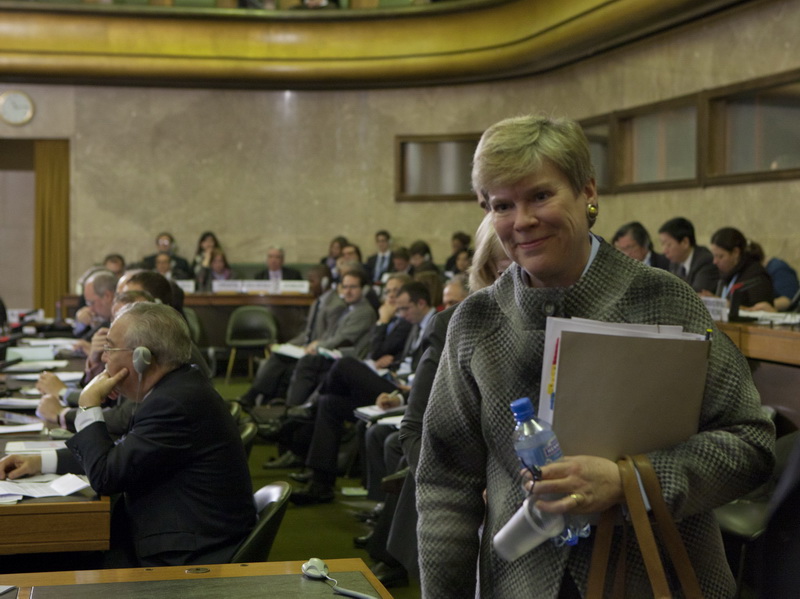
Assistant Secretary Gottemoeller Prepares To Deliver the Opening Statement

Rose E. Gottemoeller, Assistant Secretary of State for Arms Control, Verification and Compliance, prepares to deliver the opening statement for the United States at the First Plenary of the 2012 Session of the Conference on Disarmament in Geneva, Switzerland, on January 24, 2012.